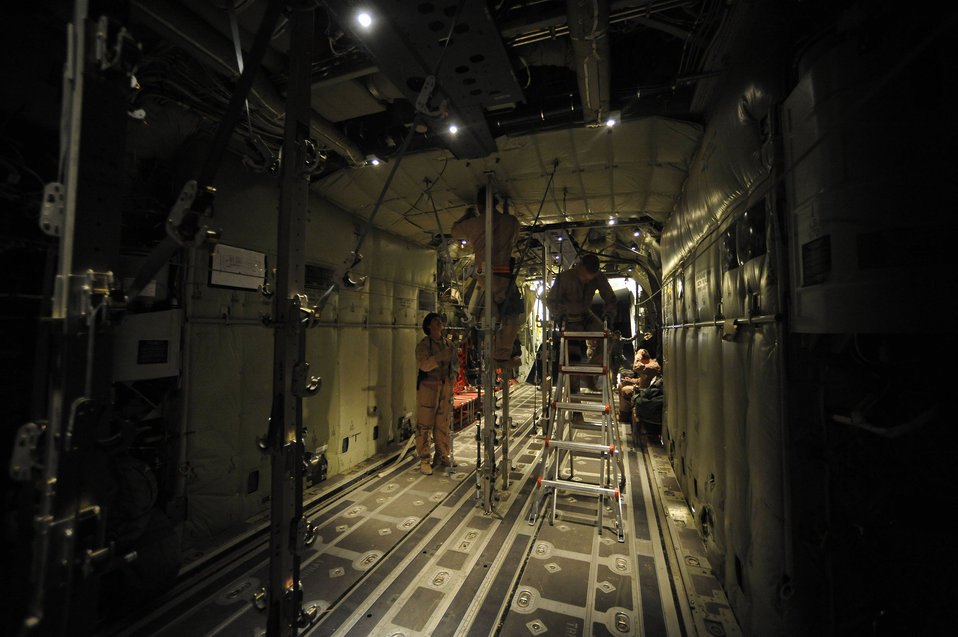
Kandahar Airmen fly missions of mercy

Airmen prepare an HC-130 for a mission originating at Kandahar Air Field Oct. 6, 2009. These Airmen are assigned to the 451st Aeromedical Squadron at Kandahar Airfield, Afghanistan.